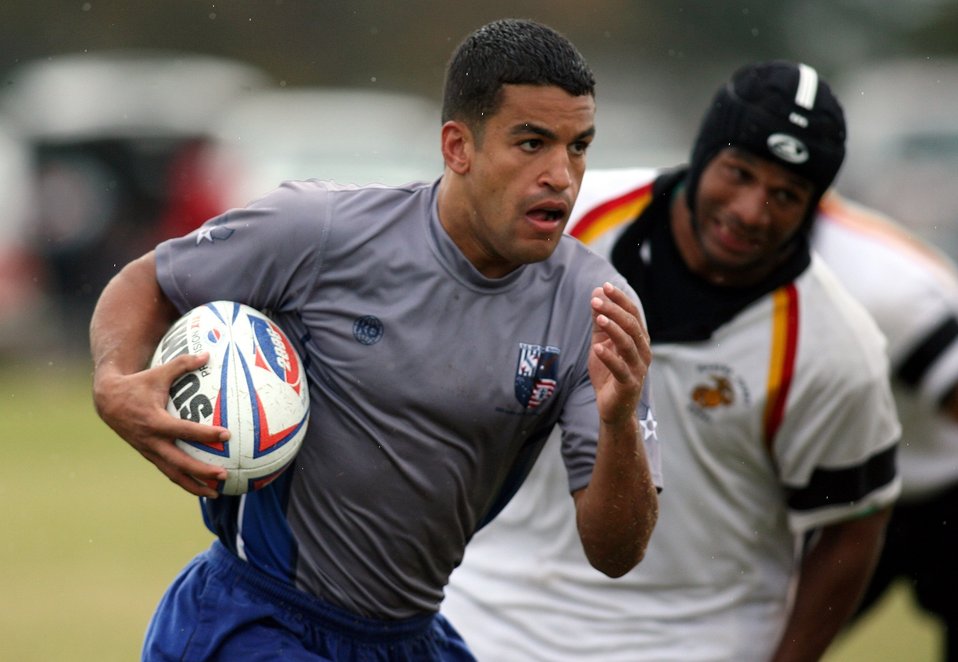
AF rugby team wins third straight Armed Forces title

1st Lt. David Pina runs past Army defenders during their match Oct. 23 at the Armed Forces Rugby Championship at Camp Lejeune, N.C. The Air Force team, which went on to win its third consecutive tournament title, edged the Army team 5-3.